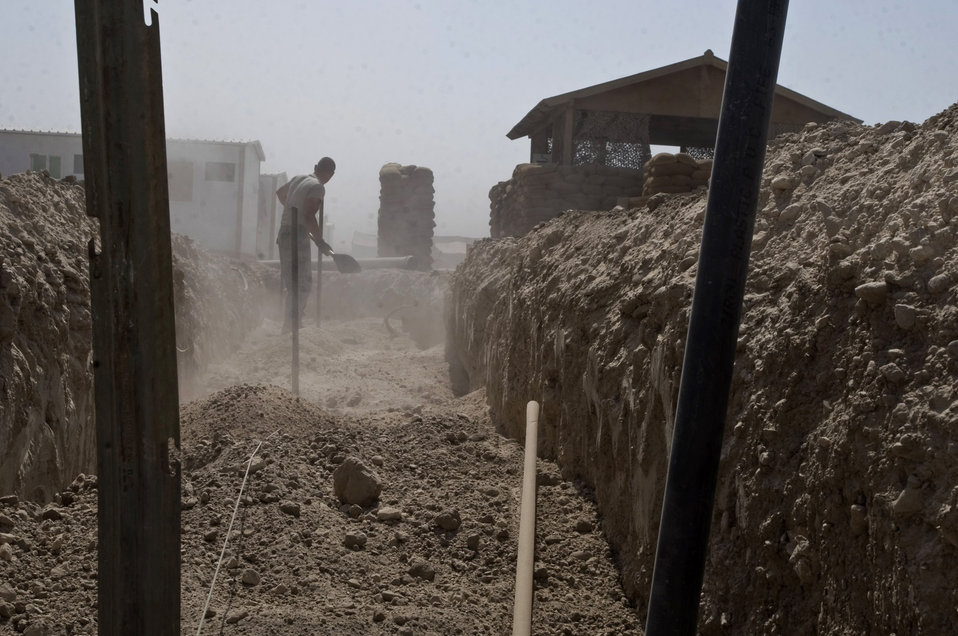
Breaking ground

Staff Sgt. Trevor Petersma levels sand as it is poured into a trench Aug. 15 at Ali Base, Iraq. In the transition from base tents to trailers, the 407th Expeditionary Civil Engineer Squadron is rerouting the power supply, and laying water and sewage systems. Sergeant Petersma is a utilities systems craftsman with the 407th ECES.